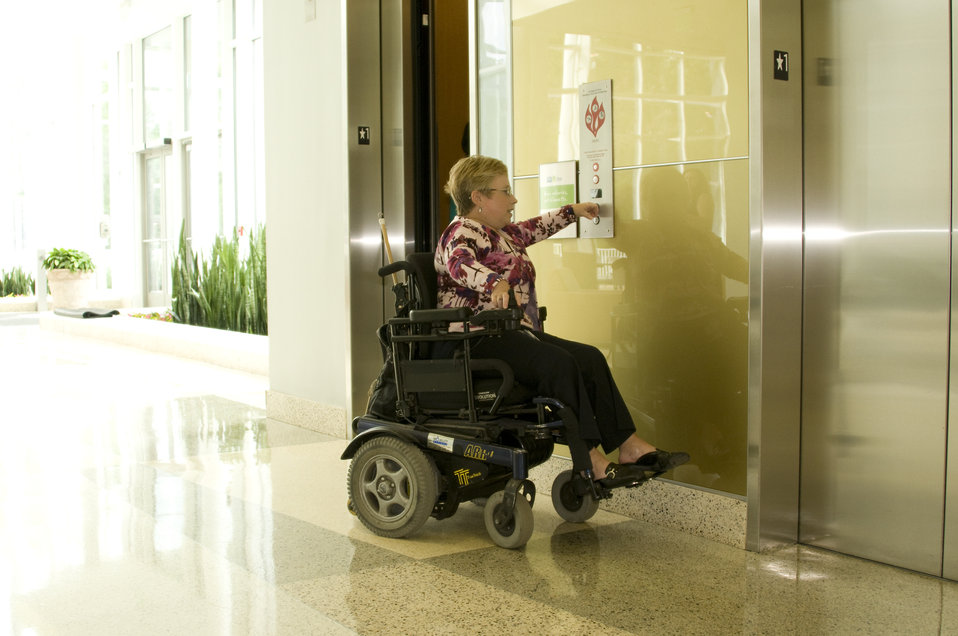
Seated in her wheelchair, the woman pictured here had reached the elevator doors inside a building on one of the Centers for Disease Control's (CDC) campuses in Atlanta, Georgia, and using her left hand, was pressing the easily-reachable button, which would hail the elevator that would take her to her desired floor. The elevator doors to the woman's left had opened, and it would be through these doors that she'd board to be carried to her destination. Note the low proximity chosen to locate the call and emergency buttons, suitable for anyone at any height.